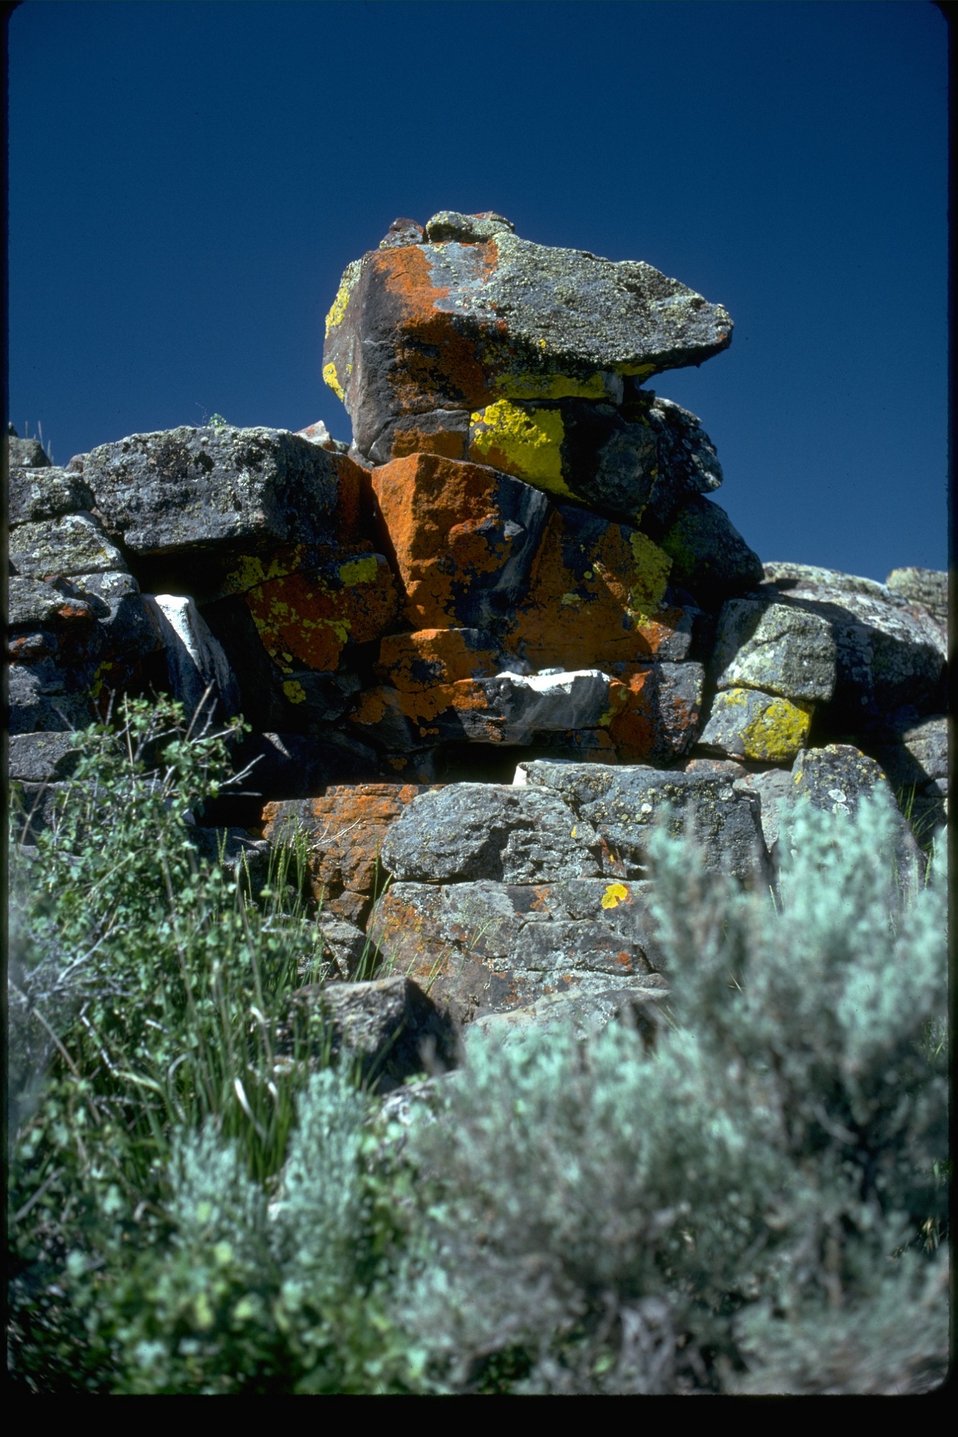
Rocks with Lichens on Steens Mountain, Oregon.